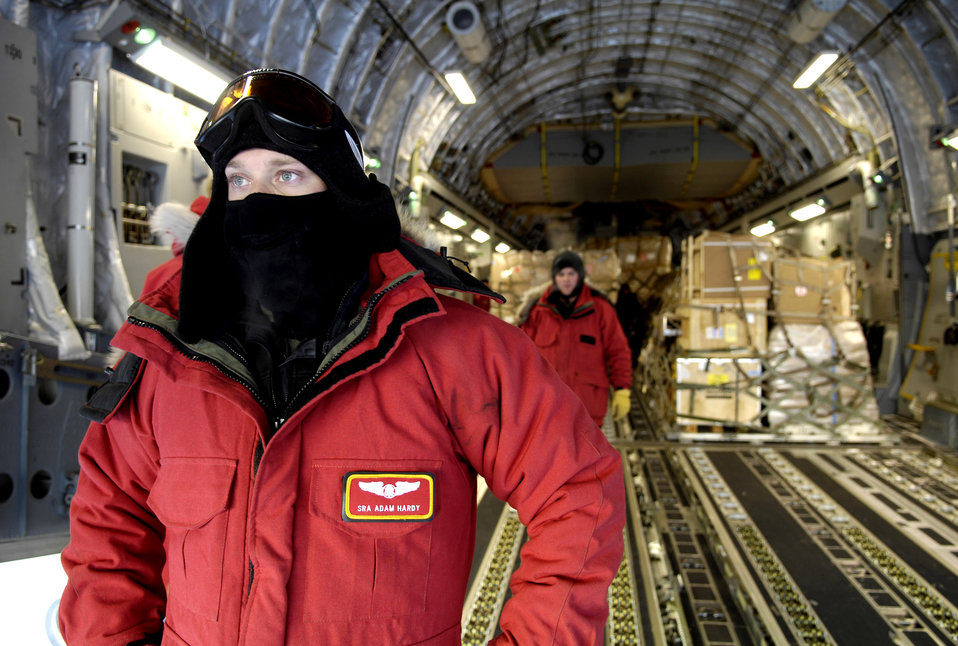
Winter flights to Antarctica wrap up

Senior Airman Adam Hardy waits to marshal a forklift to the back of his C-17 Globemaster III during an Operation Deep Freeze winter fly-in mission Aug. 25 at Pegasus White Ice Runway, Antarctica. A C-17 and 31 Airmen from McChord Air Force Base, Wash., conducted the annual winter fly-in augmentation of scientists, support staff, food and equipment for the U.S. Antarctic Program at McMurdo Station, Antarctica.